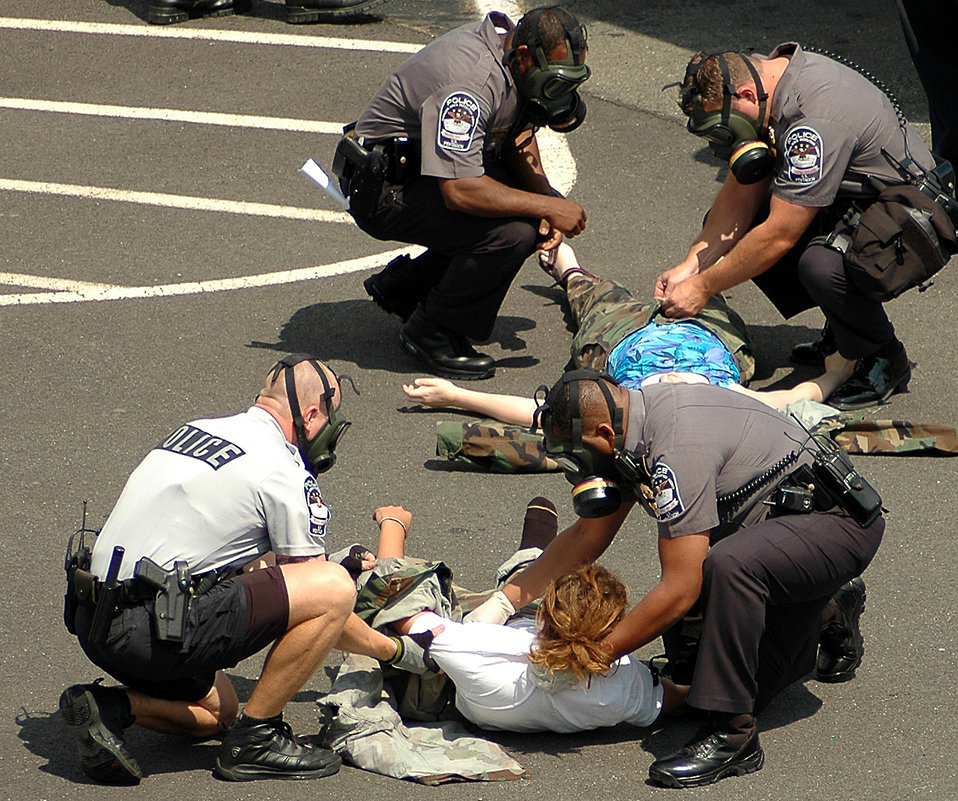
National Capitol Region first responders train for Pentagon disaster

Members of the Pentagon Force Protection Agency help